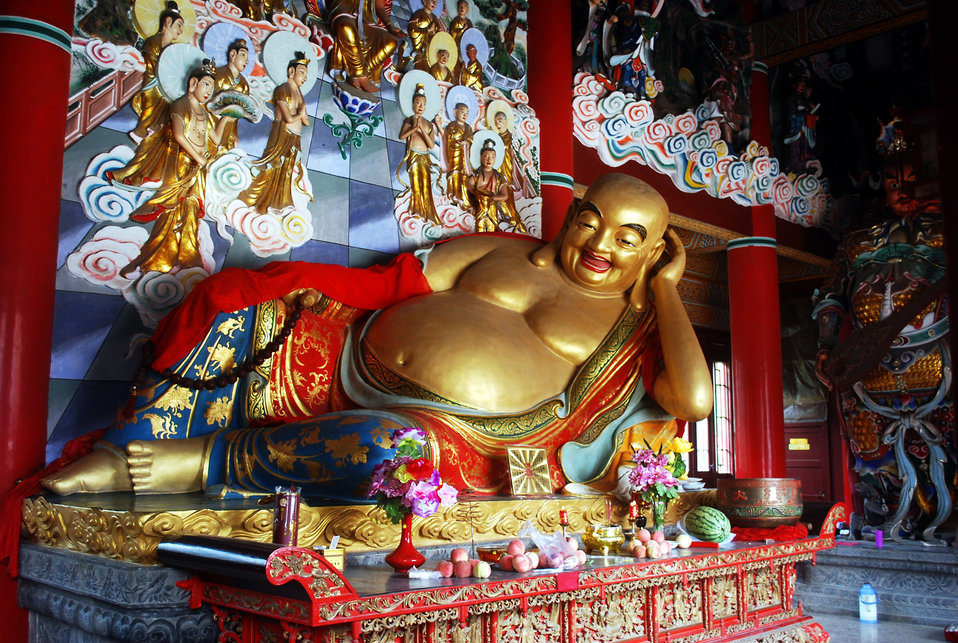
Happy buddha.